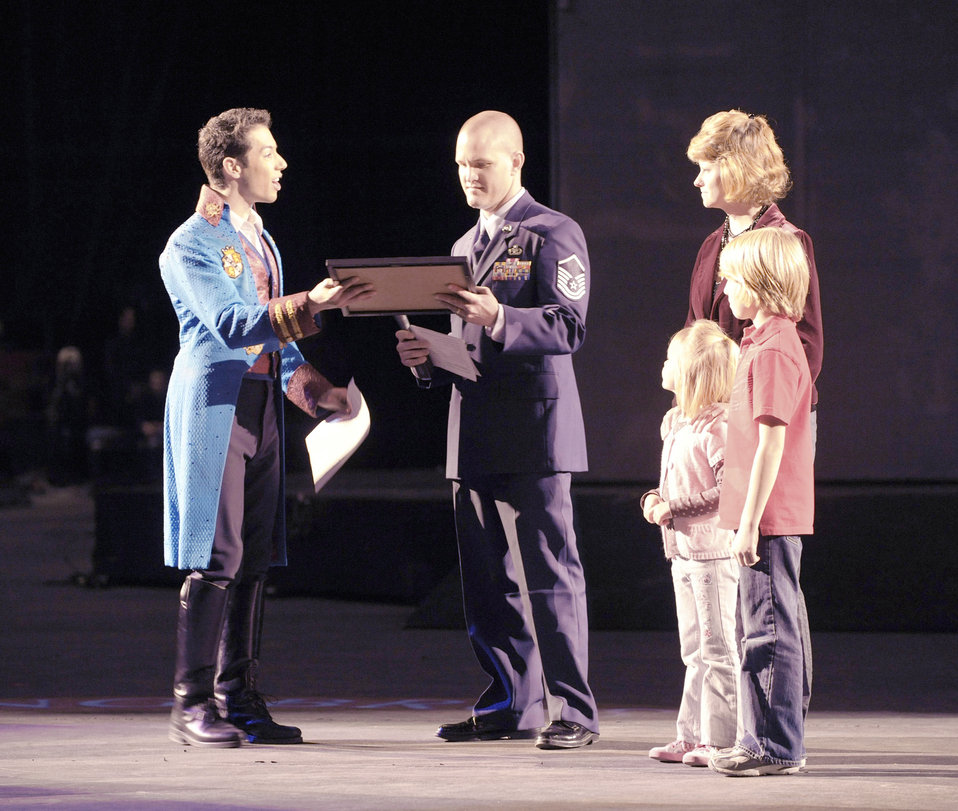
YOAFF & Circus

Master Sgt. Cameron Rogers, along with his wife Maggie and children Sam and Laine, receive a certificate from Magical Zingmaster Alex Ramon designating the Rogers family as guest ringmasters for the Ringling Bros. and Barnum & Bailey